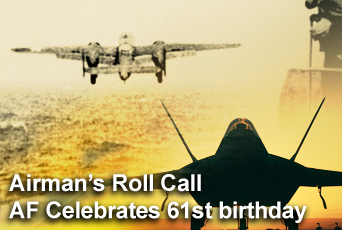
Roll Call: Air Force Birthday

This week's Airman's Roll Call highlights the Air Force's 61st birthday.